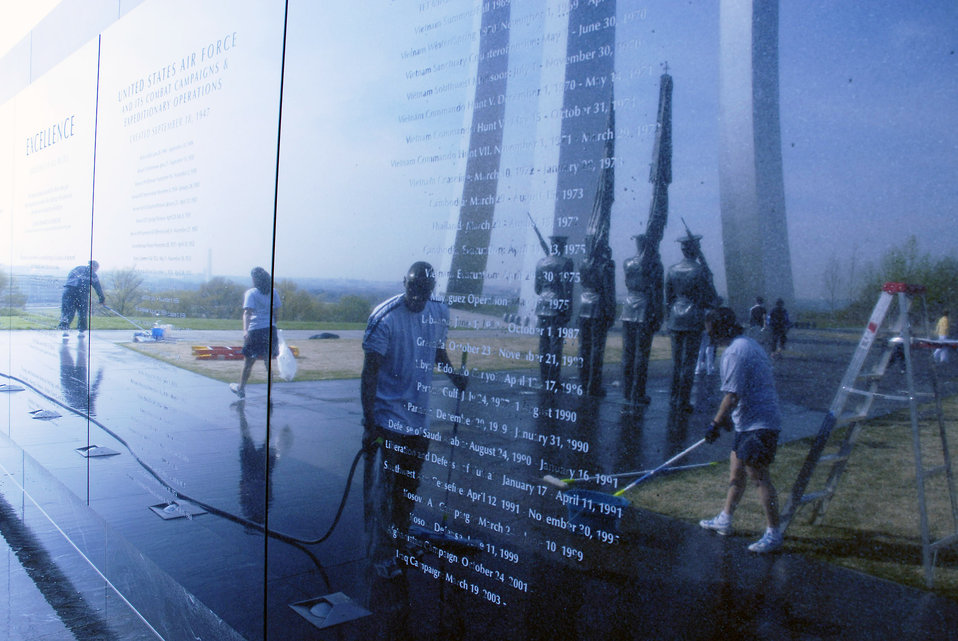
Sprucing up the Air Force Memorial

More than 50 volunteers from Air Force Sergeants Association Chapter 300 in Washington D.C. gathered on the grounds of the Air Force Memorial April 19 to help spruce up the site. Dedicated on Oct., 14, 2006, the memorial honors the service and sacrifice of the men and women of the United States Air Force and its predecessor organizations. The wall bears the inscriptions of combat campaigns and expeditionary operations and contains the words of Air Force leaders that relate to the service's core values of Integrity First, Service Before Self and Excellence in All We Do. The memorial is located just outside the nation's capital in Arlington, Va., adjacent to Arlington National Cemetery and overlooking the Pentagon.